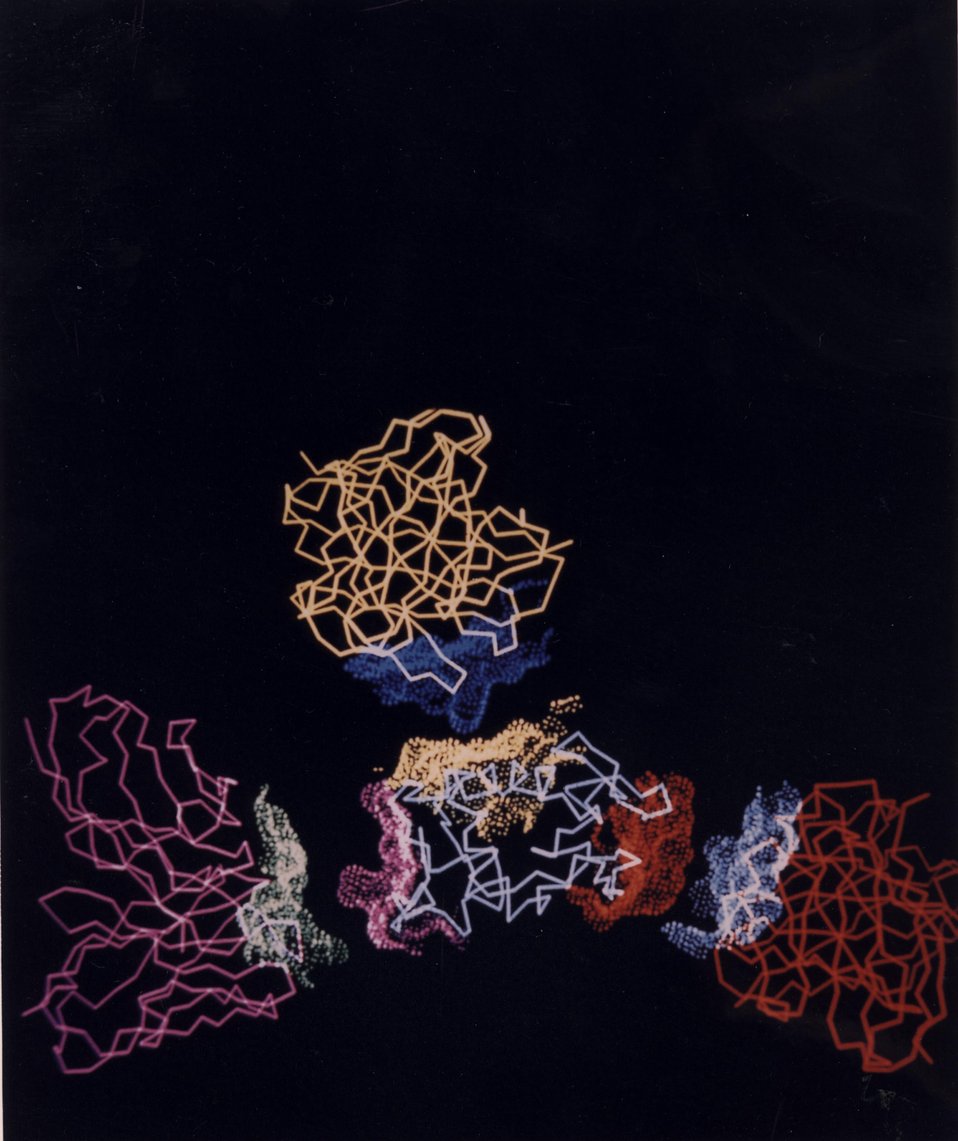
Details of the Body's Defense. Antibodies serve at the front line of the body's defense system. The antigen here is lysozyme, an enzyme found in egg whites. Shown are a single lysozyme molecule (blue) and portions of three different antibodies from mouse (red, yellow, and violet).